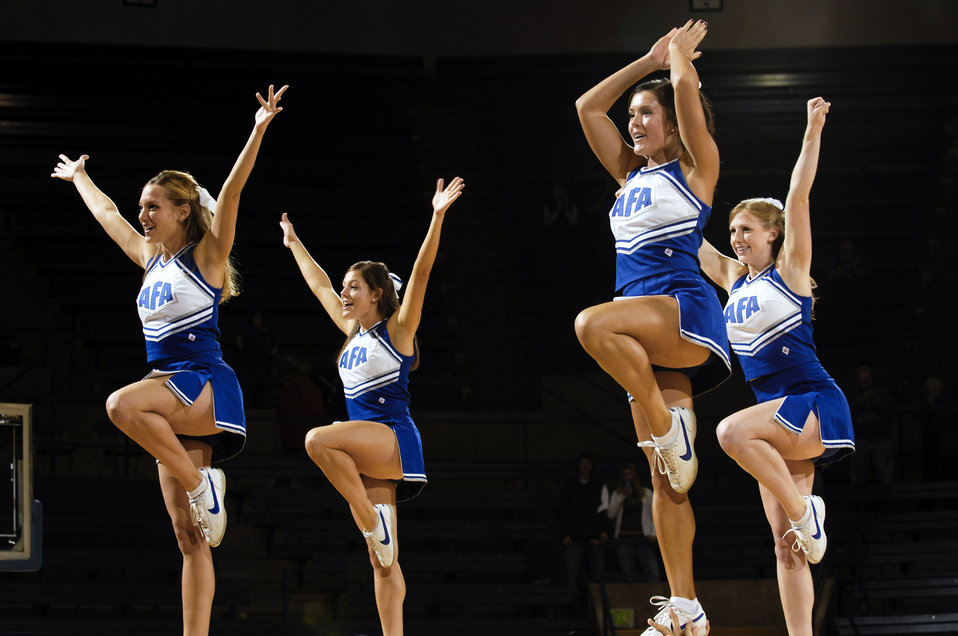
Air Force falls to Brock University, 66-63, in exhibition men's basketball

The Blue Spirit Squad cheers during the Air Force vs. Brock University exhibition basketball game at the academy's Clune Arena. Air Force was defeated 66-63 on a last second three-pointer by Rohan Steen of the Badgers. The Falcons open the 2007-08 regular season on Nov. 9 in the Air Force Classic at Clune Arena.